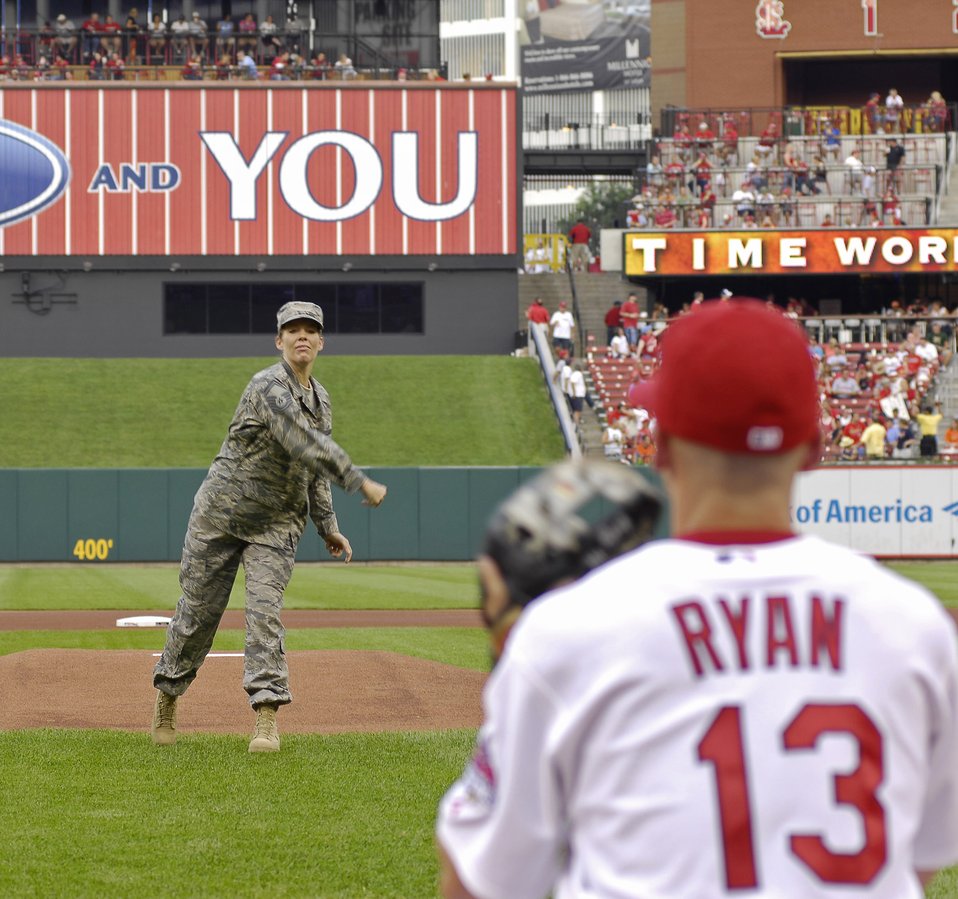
Air Force week in St. Louis

Senior Master Sgt. Letitia Whitaker throws out the first pitch at the St Louis Cardinals-San Francisco Giants baseball game July 7. She was selected to make the pitch as part of Air Force Week St. Louis. Sergeant Whitaker, a Bronze Star medal recipient, is a member of the Missouri Air National Guard.